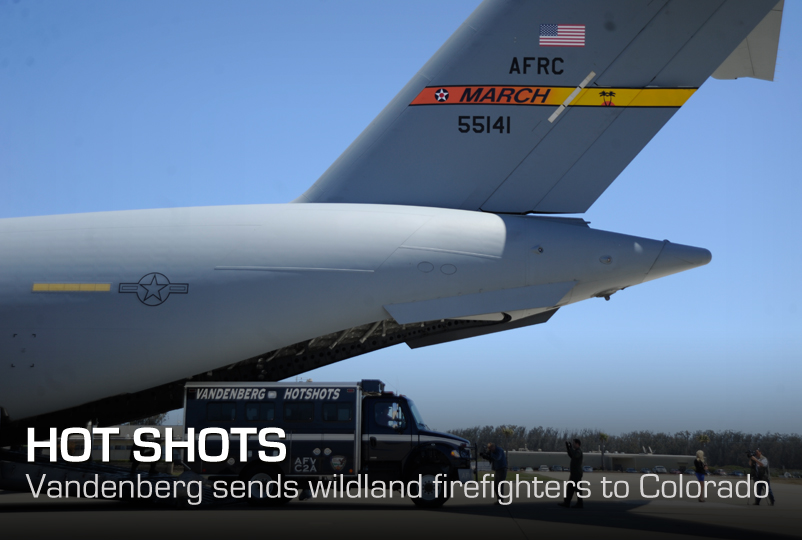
Hot Shots

A Vandenberg Air Force Base Hot Shots vehicle backs into the belly of a C-17 Globemaster III at Vanderberg Air Force Base, Calif., on June 27, 2012. Eighteen members of the Vandenberg Hot Shot crew, along with two crew carrier vehicles, one superintendent support vehicle and one all-terrain vehicle deployed to Colorado to support the wildland fire-fighting efforts. The Globemaster III is assigned to March Air Reserve Base, Calif.